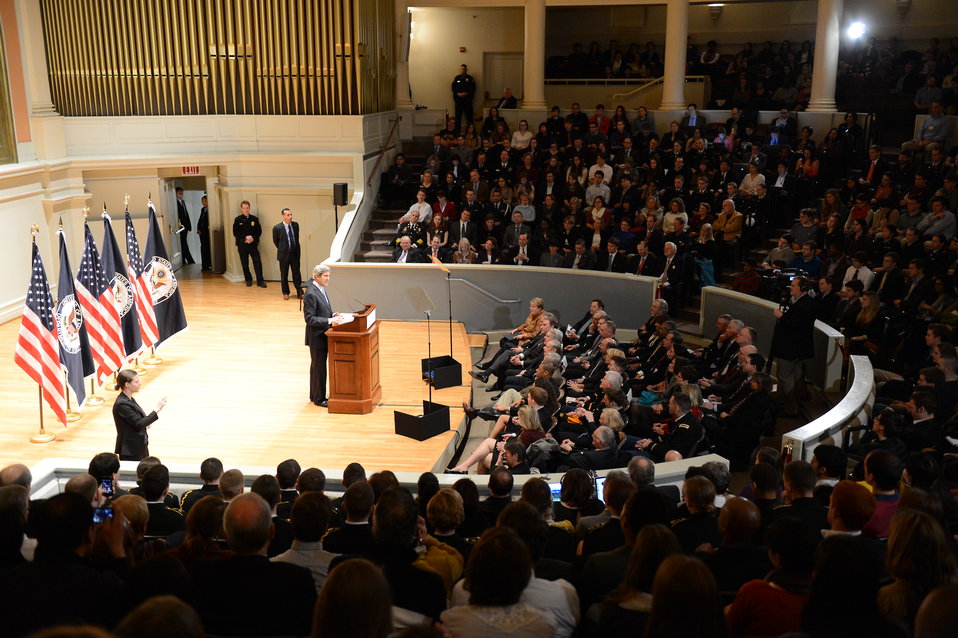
Secretary Kerry Delivers Remarks at UVA

U.S. Secretary of State John Kerry delivers remarks at the University of Virginia in Charlottesville, Virginia, February 20, 2013.